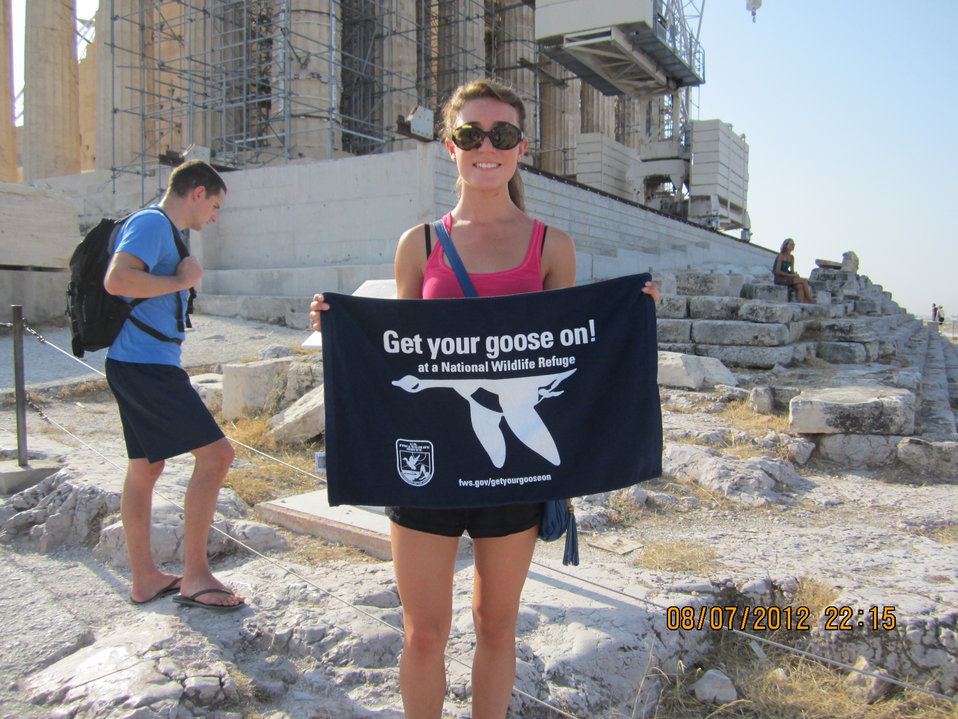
Get Your Goose On! - Parthenon Style!